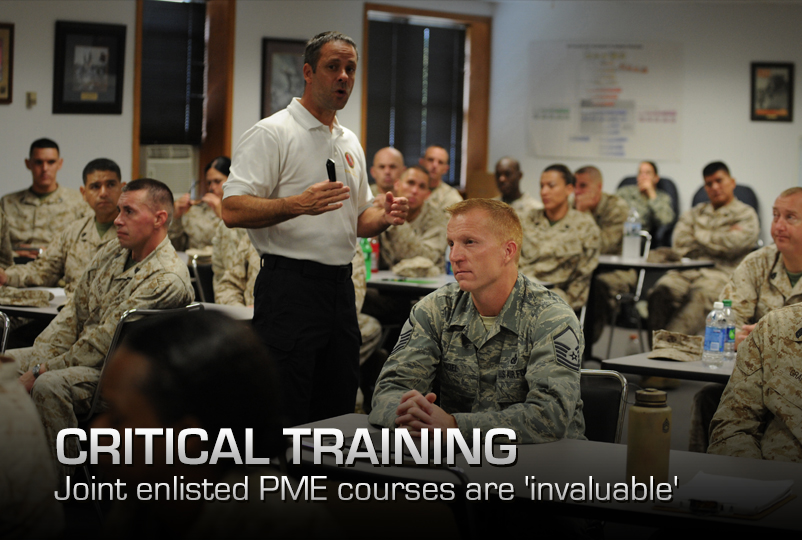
Critical Training